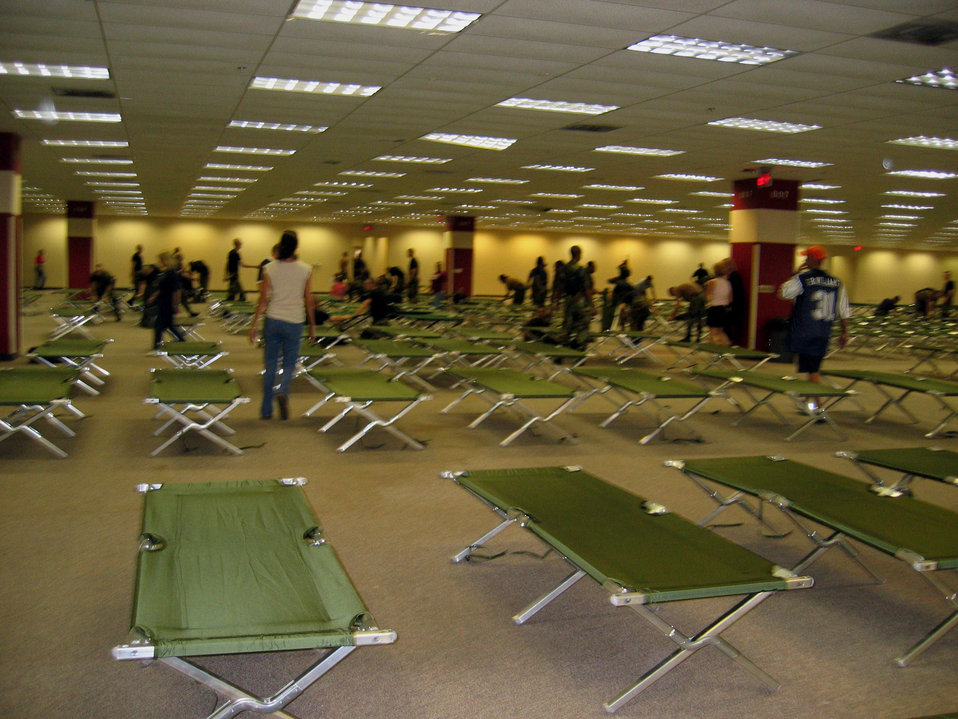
Lackland Airmen turn office areas into living spaces

SAN ANTONIO -- Two hundred Airmen from nearby Lackland Air Force Base helped other volunteers set up about 2,500 cots and tear down modular office furniture in a 350,000 square foot building. The building will be used for people displaced by Hurricane Katrina.